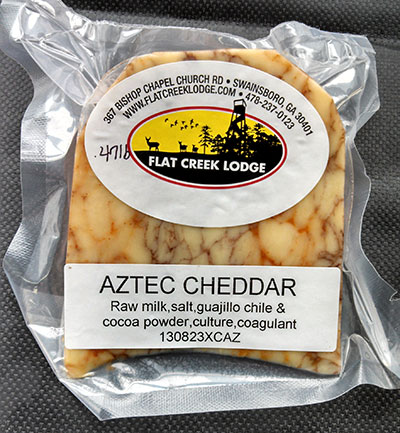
RECALLED – Cheese

December 24, 2013 – Product Recall – Flat Creek Farm & Dairy Recalls Cheese Because of Possible Health Risk.